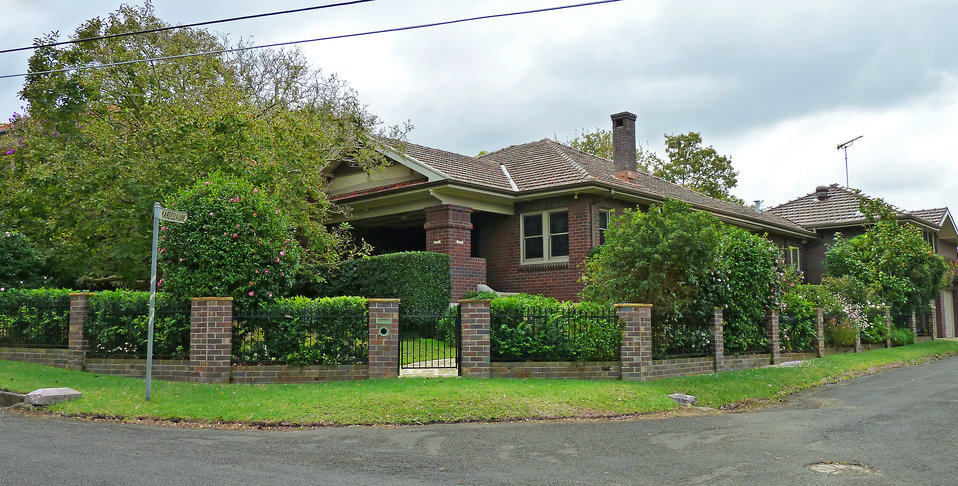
16 Kardella Avenue, Killara, New South Wales, Australia.